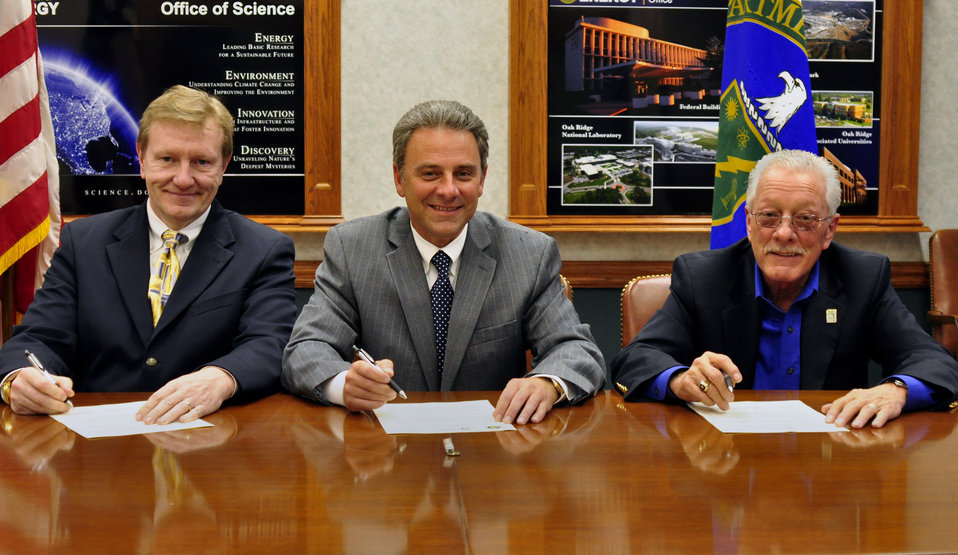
EM Contractor committed to reindustrialization of Oak Ridge site

In a community noted for its ability to partner and collaborate, the three major entities responsible for the cleanup of the Department of Energy’s (DOE) East Tennessee Technology Park (ETTP) have established a new standard for cooperation.

DOE and its new environmental management contractor, URS | CH2M Oak Ridge LLC (UCOR), in conjunction with the Community Reuse Organization of East Tennessee (CROET) have signed a partnering agreement to define each organization’s roles and responsibilities in accelerating the private development of the site now known as the Heritage Center at ETTP.